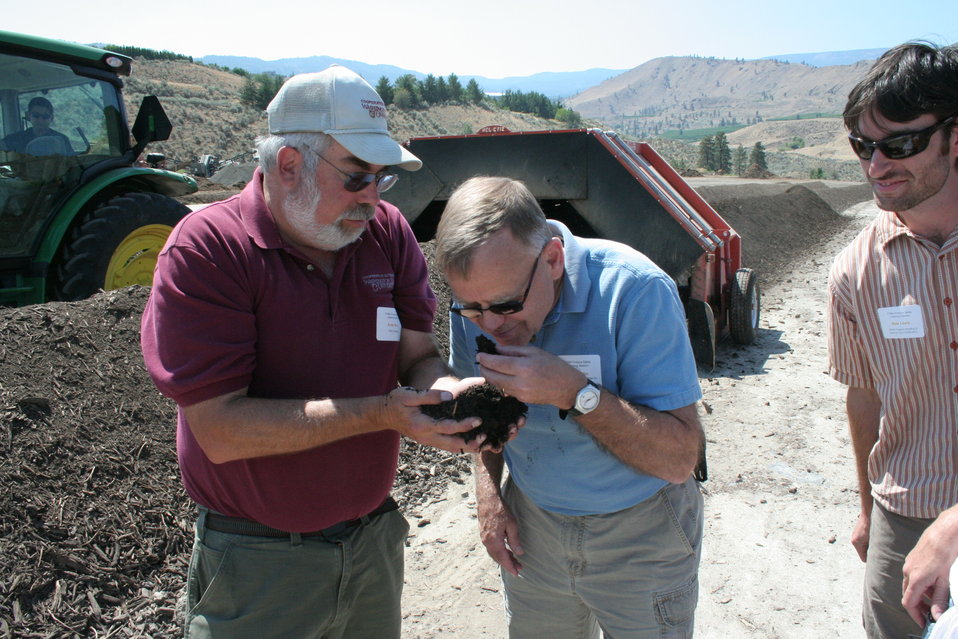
On the Road with Mike Taylor

From left: Andy Bary, a Washington State University research scientist, FDA Deputy Commissioner Michael Taylor, and Nathaniel Lewis of the Washington state Department of Agriculture at the Stemilt Growers composting facility in Wenatchee, WA. Mike and colleagues started a five-day tour of the Pacific Northwest on Sunday, Aug. 11, 2013 -- visiting Idaho, Oregon and Washington -- to get a first-hand look at produce production and irrigation operations, and to discuss the proposed Produce Safety Rule with growers, food industry representatives and state officials. For more about Mike's multi-region tour, read these FDA Voice blog posts:

• Hearing the Concerns of Maine Growers Striving for Agricultural Diversity
• On the Road with Mike Taylor: Touring the Pacific Northwest
• On the Road with Mike Taylor, Day 2: Frank Talk in Farm Country
• On the Road with Mike Taylor, Day 3: Families and Partnerships
• On the Road with Mike Taylor, Day 4: Looking to the Future